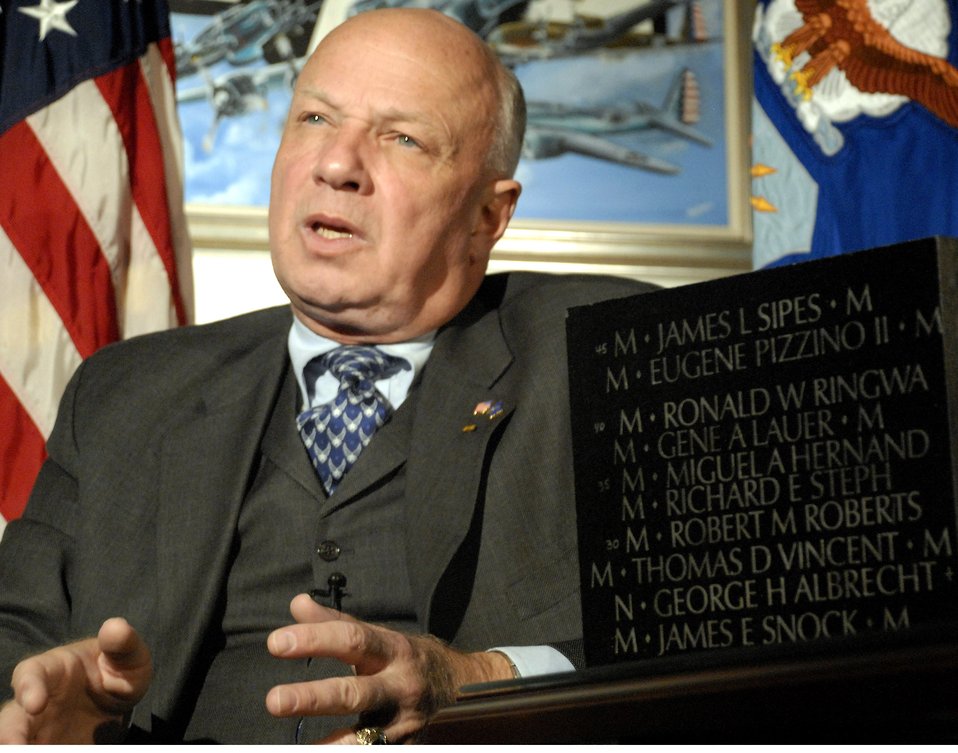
Vietnam wall speaks to both present and past

Mr. John Wheeler, special assistant to the Secretary of the Air Force, chaired the Vietnam Veterans Memorial Fund, which was the organization responsible for building the memorial located on the National Mall.